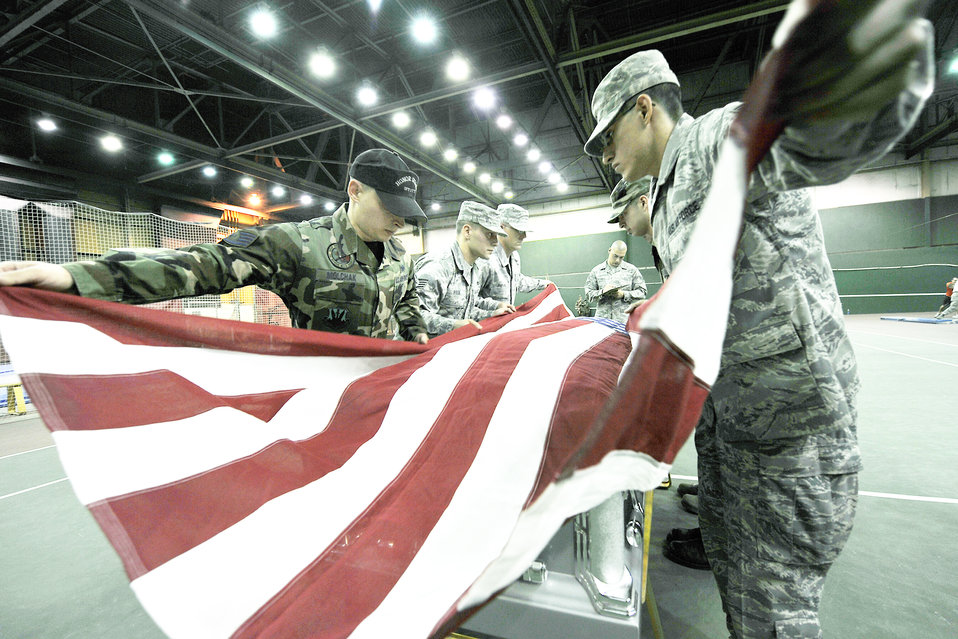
Learning the way

Senior Airman Noel Sweeney evaluates honor guard members as they drape an American flag across a casket during a training session Oct. 21, 2009, at Offutt Air Force Base, Neb. Air Force Honor Guard trainers visited the base to evaluate and help sharpen the skills of base honor guard members. Airman Sweeney is an Air Force Honor Guard member.